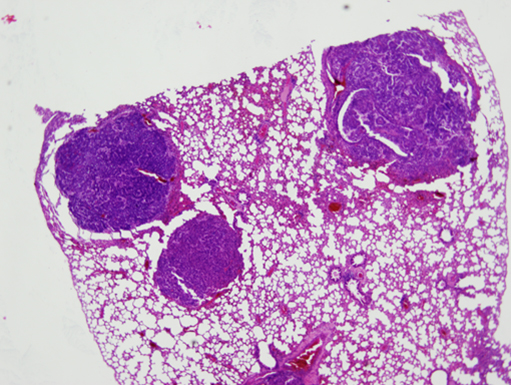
Genetic engineering; DNA repair

Section of lung tissue from a double knockout mouse, stained to show lung tumors. Mice lacking both the neil1 and nth1 genes were particularly prone to pulmonary anbd liver tumors during their second year.